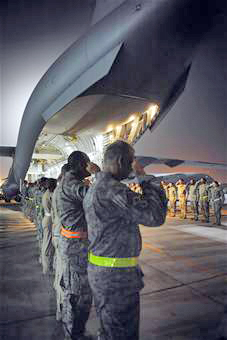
Putting life in perspective 6,000 miles from home

Military members render honors for fallen warriors during a dignified transfer in July at an air base in Southwest Asia.